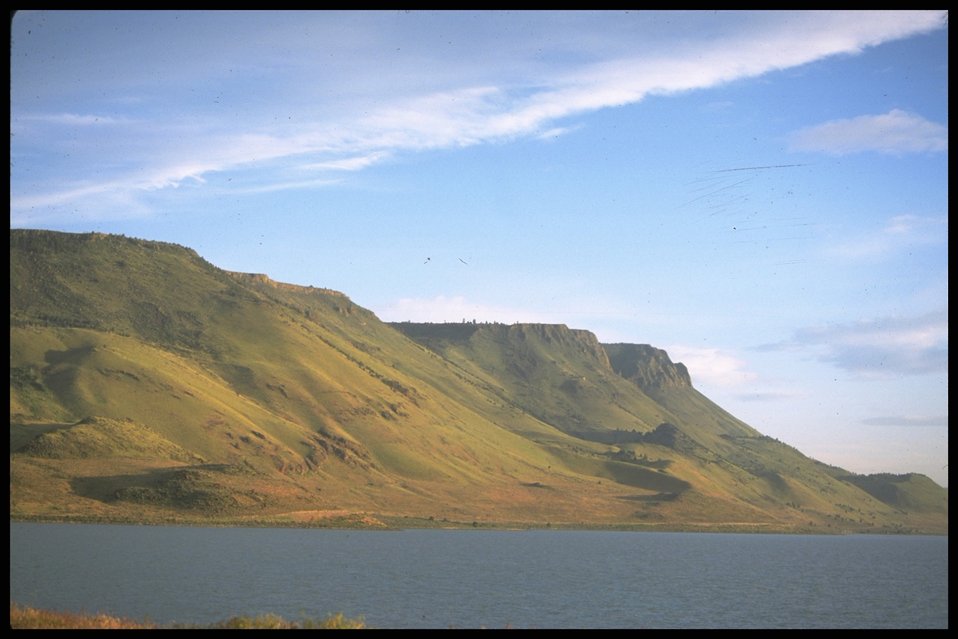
Scenic view of Abert Rim, Lakeview District.